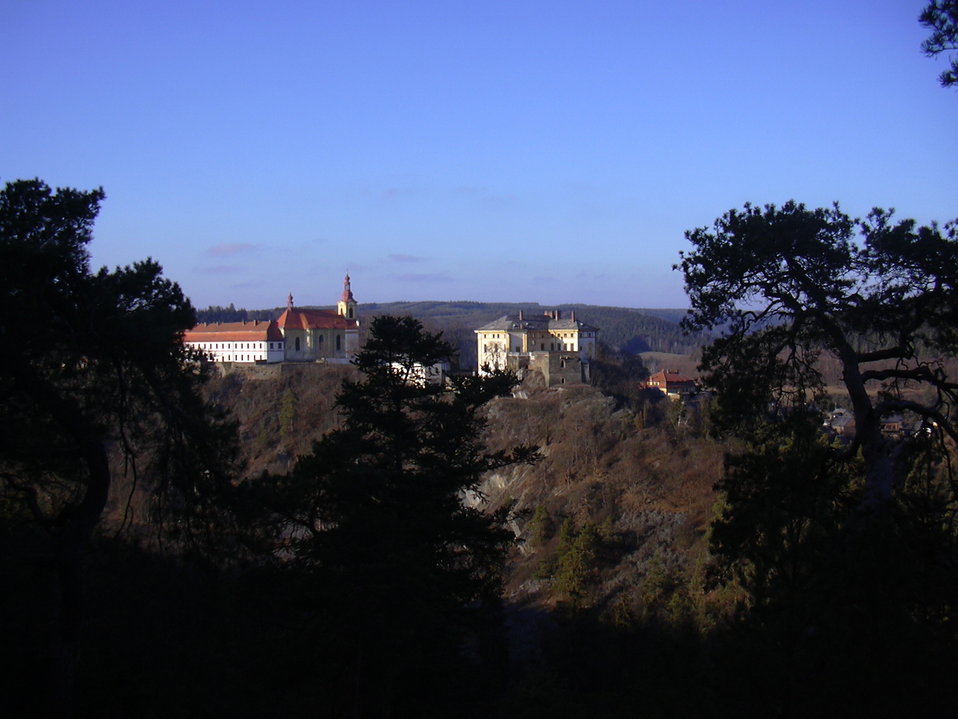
Čeština: Pohled na kostel a zámek v Rabštejně nad Střelou ze skalního ostrohu Hraběcí vyhlídka